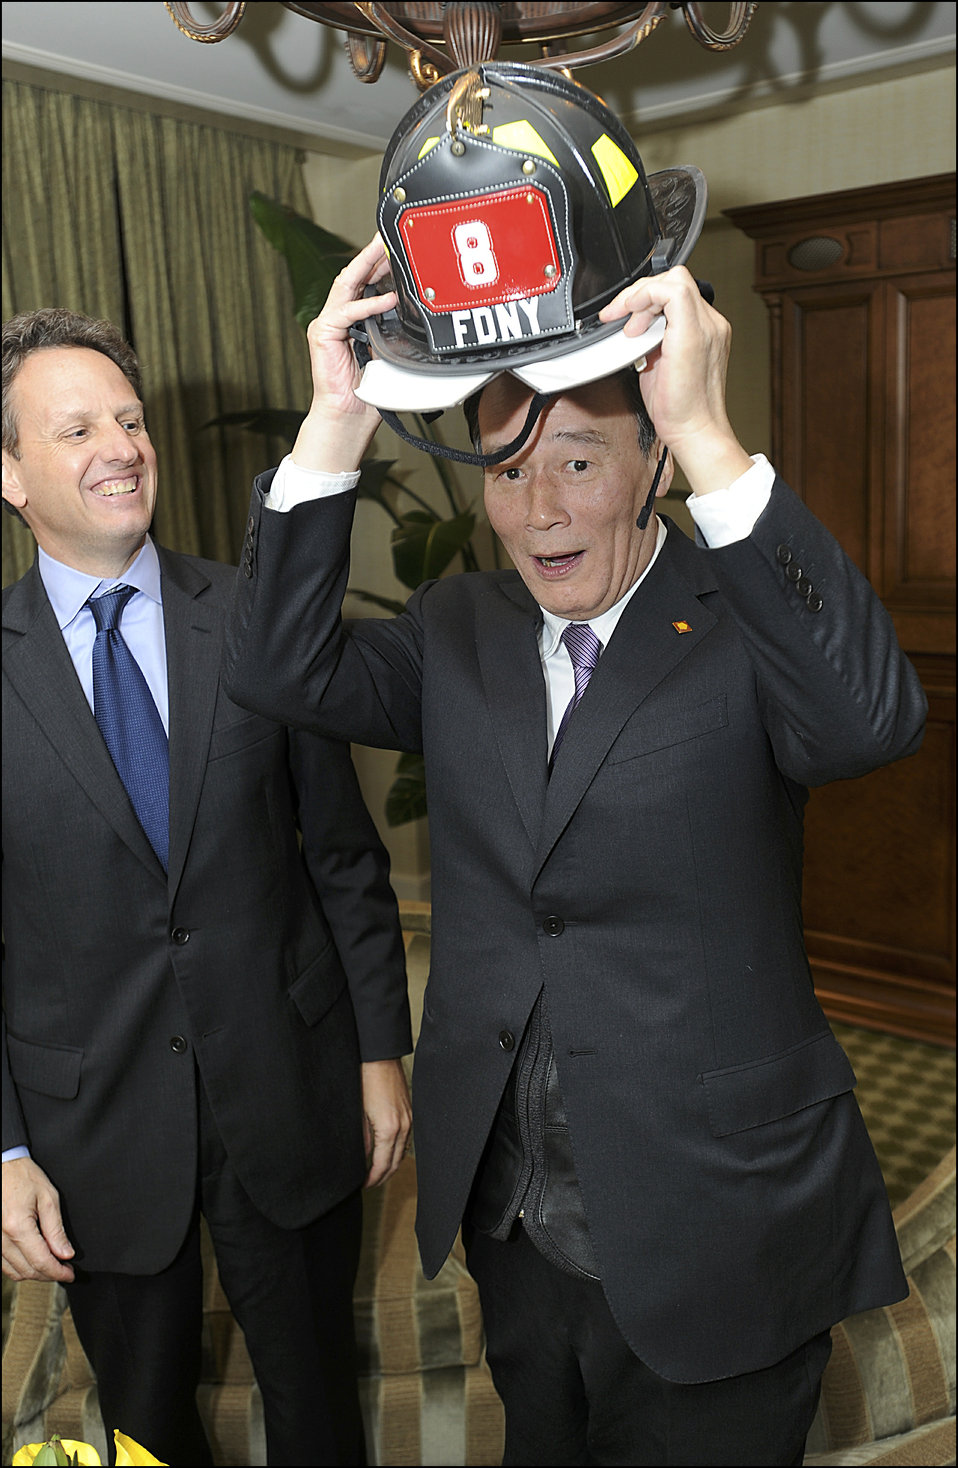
'Firefighter'

During their working dinner Tuesday night, Secretary Geithner presented Chinese Vice Premier Wang Qishan with an authentic New York City Fire Department hat – a reference to the “firefighter” nickname that the Vice Premier earned in China for being the “go-to guy” for handling tough issues like SARs, the Olympics, and Guangdong’s mid-1990s banking crisis.